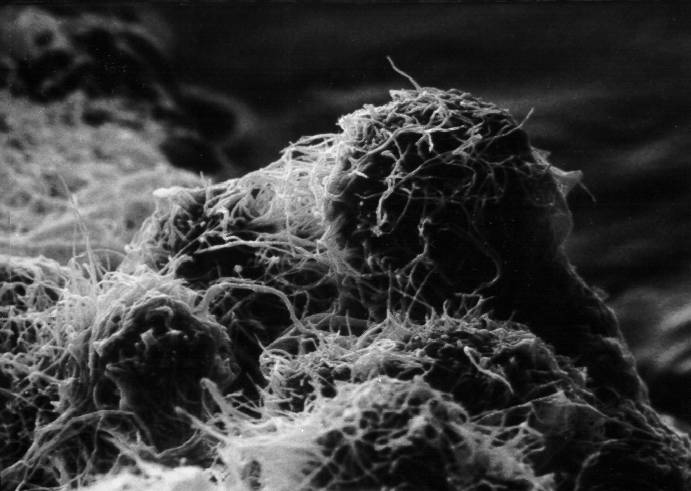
Scanning Electron Micrograph of Curvularia lunata